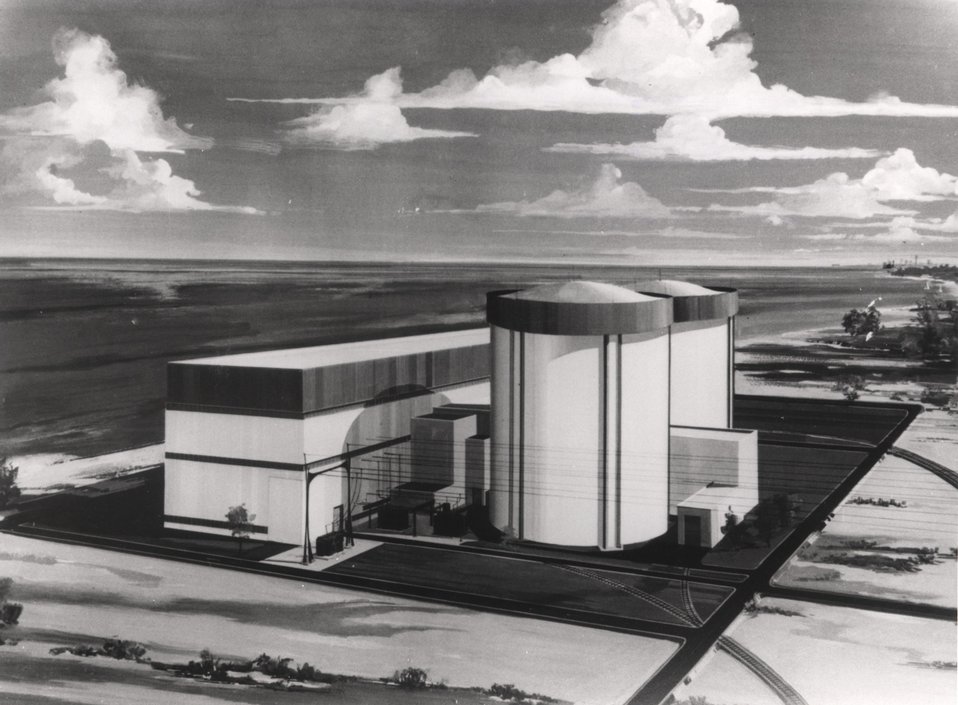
Artist's drawing depicts the Commonwealth Edison Company's Zion (Illinois) nuclear power station. Circa 1967.